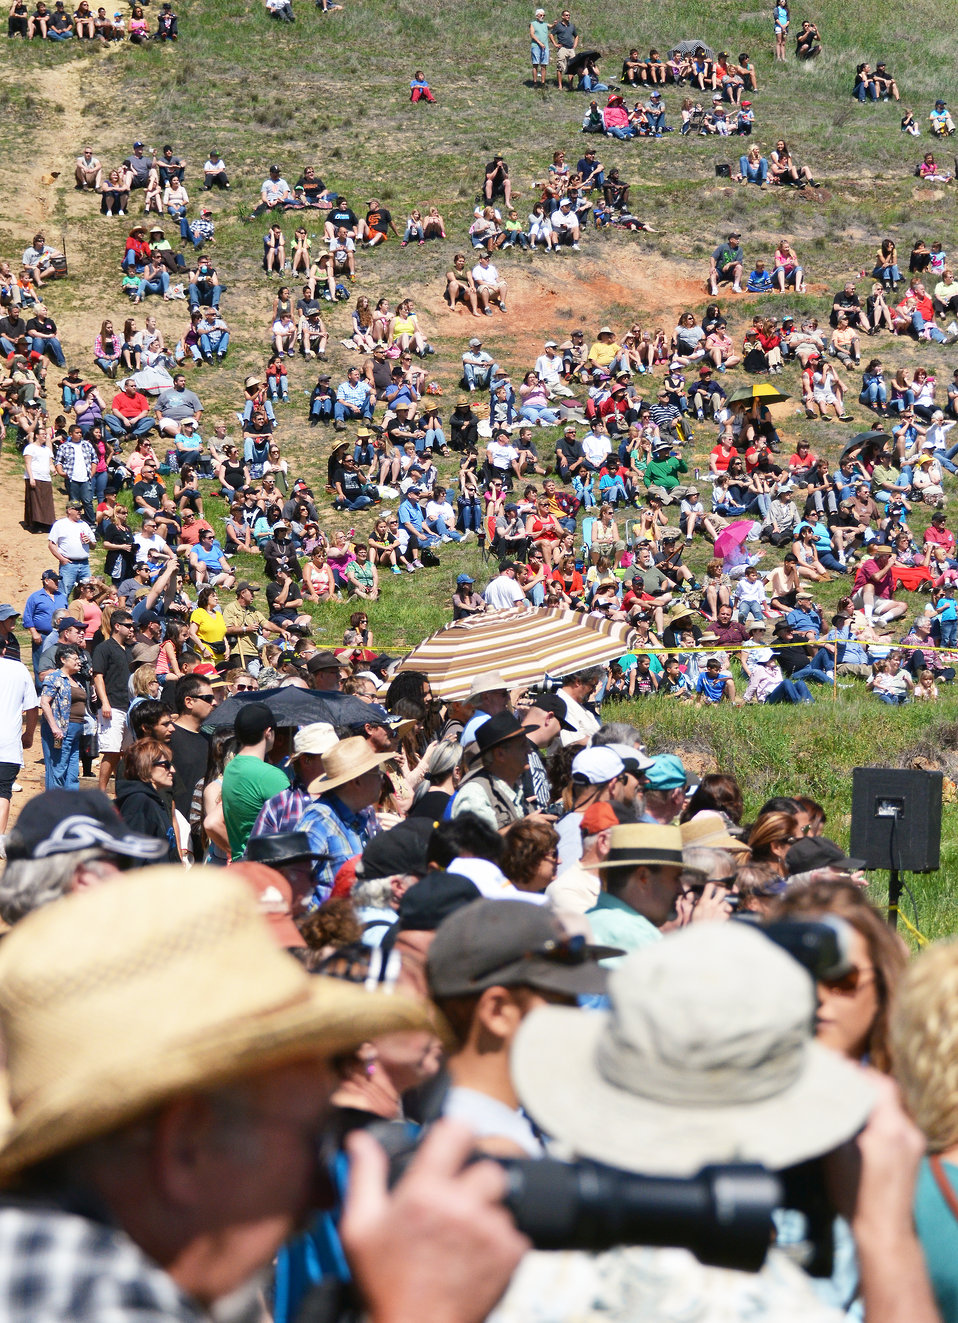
Historic weekend in Knights Ferry

A huge crowd of history buffs covers the hillside above Knights Ferry during the Civil War reenactment weekend at the U.S. Army Corps of Engineers Sacramento District’s Stanislaus River Parks in Knights Ferry, Calif., March 22, 2014.